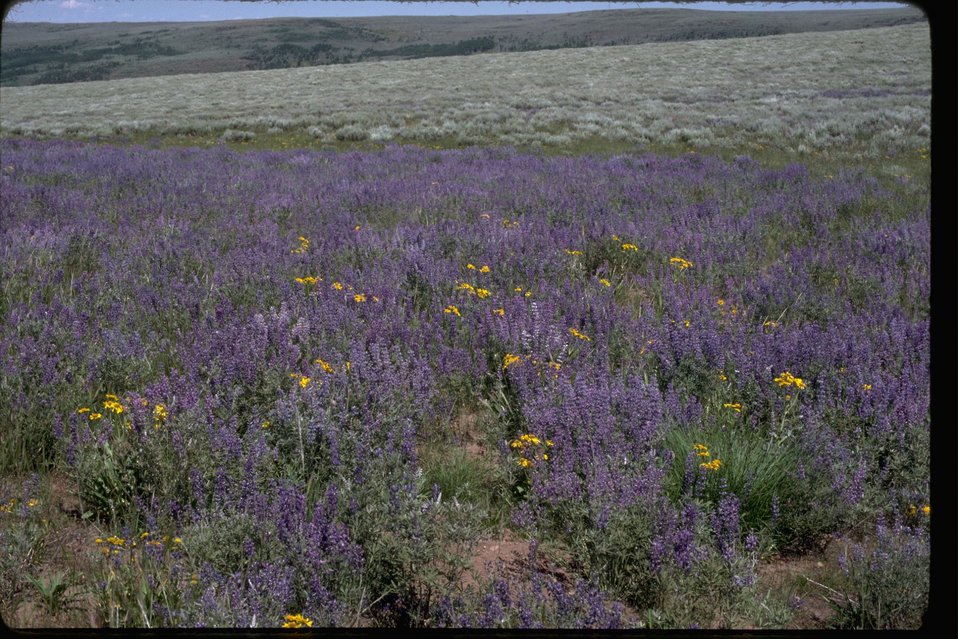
Steens Wildflowers from the side of Little Blitzen Gorge looking northwest from Loop Road. 2-86F.